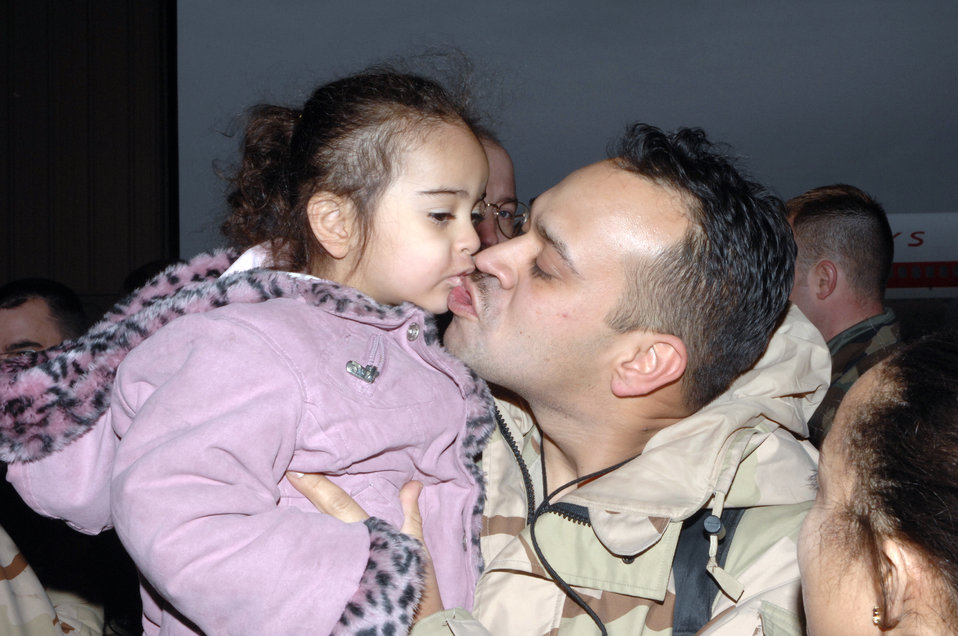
Welcome home

Staff Sgt. Erving Camacho shares a kiss with his daughter, Ryoko, Jan. 18 at Cannon Air Force Base, N.M. Sergeant Camacho and other Airman from Cannon AFB returned after serving in Iraq as part of the Air Expeditionary Force 3 and 4 rotation. Sergeant Camacho is assigned to the 524th Aircraft Maintenance Unit.